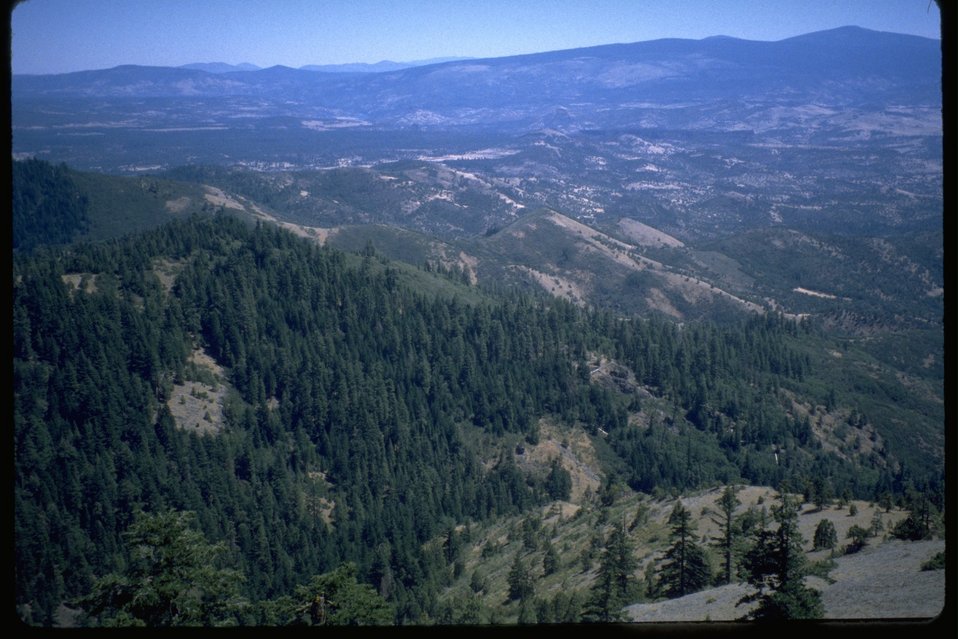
East of Mount Shasta at Boccard Point, Soda Mountain Wilderness Study Area.